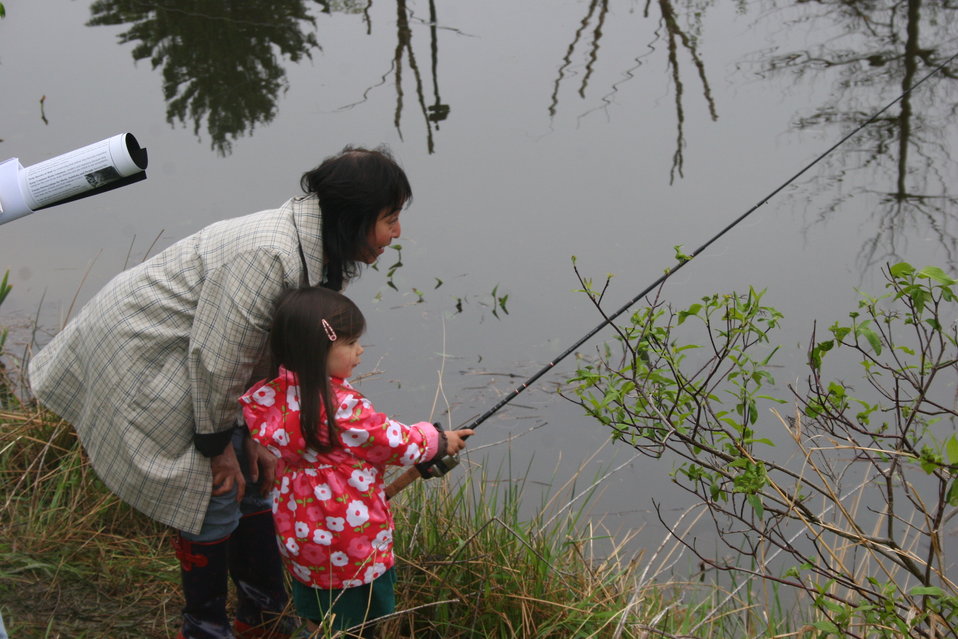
Fishing event at U.S. Fish and Wildlife Service Regional Office in Hadley, MA